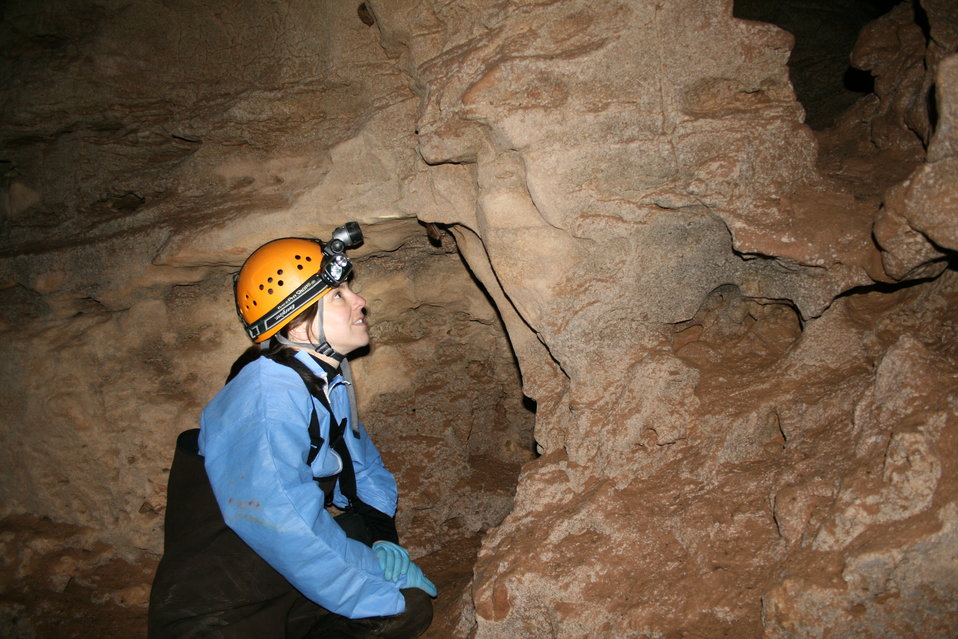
USFWS WNS staff Ann Froschauer inspects a bat

USFWS National WNS Communicaitions Leader Ann Froschauer inspecting a bat in a Missouri cave